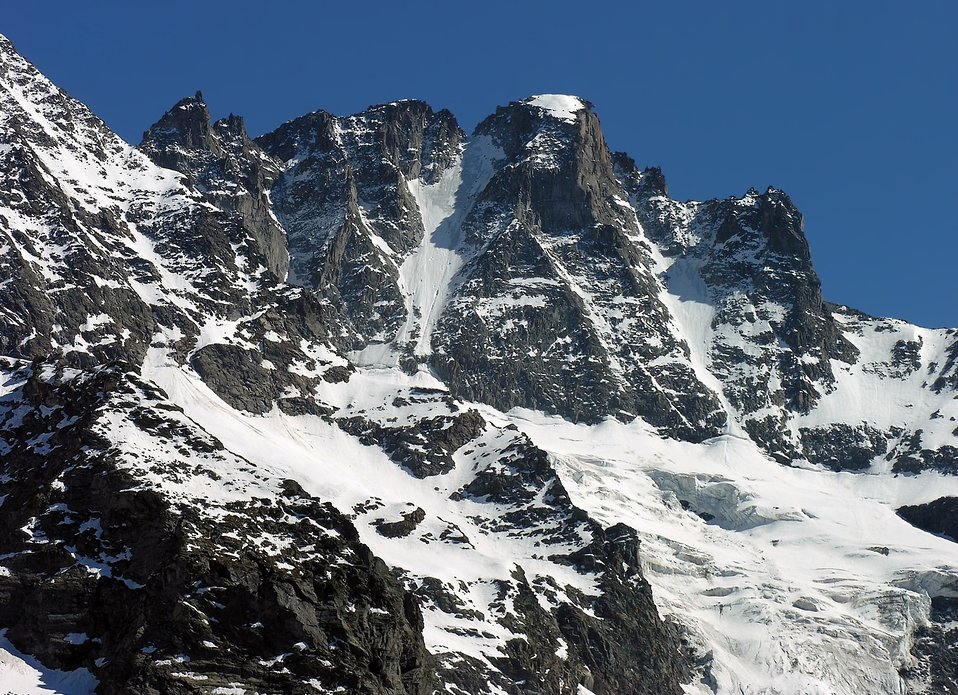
Italiano: La Becca di Gay